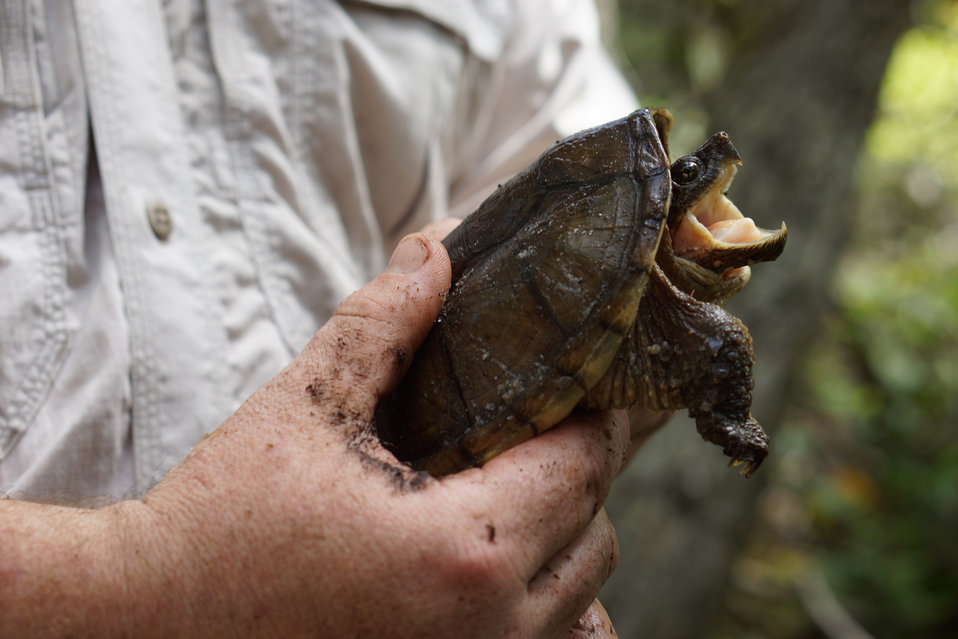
Snapping turtle in the hands of Thomas Floyd

In May, bog conservationists from Tennessee, North Carolina, and Georgia convened in the north Georgia mountains for the spring, 2014 meeting of the Bog Learning Network. The event provided an opportunity for biologists to see, first hand, the result of management efforts at two north Georgia bogs. More importantly, the outings provided an opportunity to share innovative approaches to bog management, such as the role of the Georgia Plant Conservation Alliance in conserving rare plants and coordinating a cadre of volunteers to work on bog management.

The Bog Learning Network was convened in the winter of 2013 as a way to bring together people working for bog conservation across the Southern Appalachians. Southern Appalachian bogs are one of North America’s rarest habitats and home to many rare plants and animals.